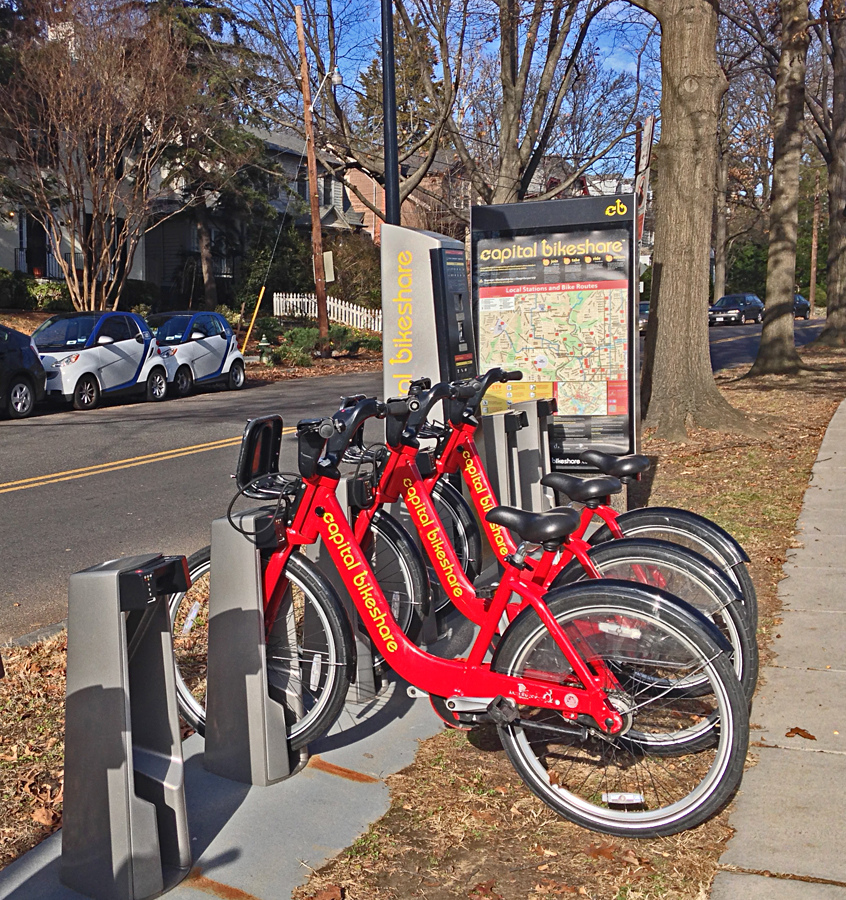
Capital Bikeshare

Having #BikeShare stations around a city makes it easier for people to choose cycling over less environmentally friendly transportation. #BikeToWork